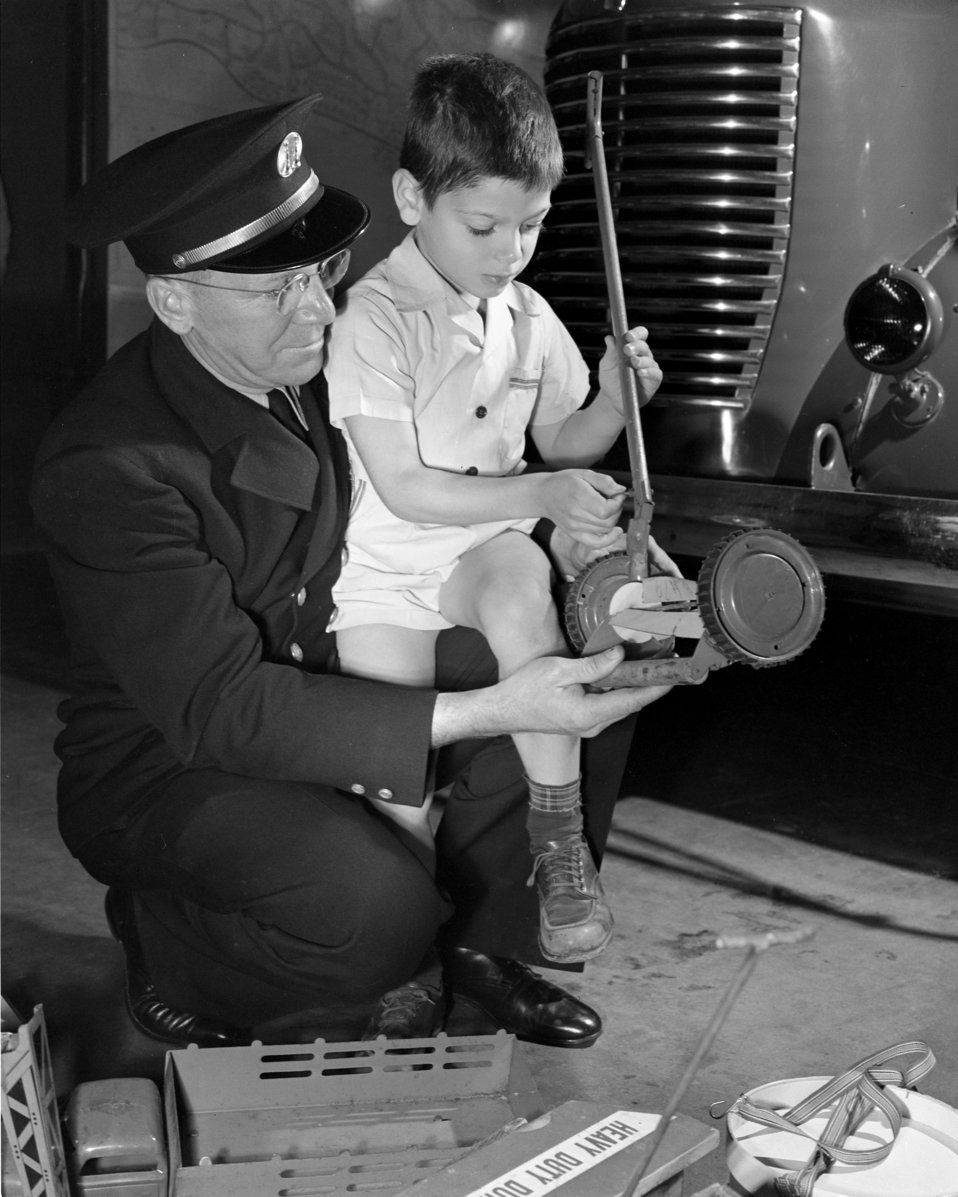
Christmas Toys To Be Fixed By Firemen Oak Ridge 1947

3906-1 DOE photo Ed Westcott 11-14-1947 Oak Ridge Tennessee